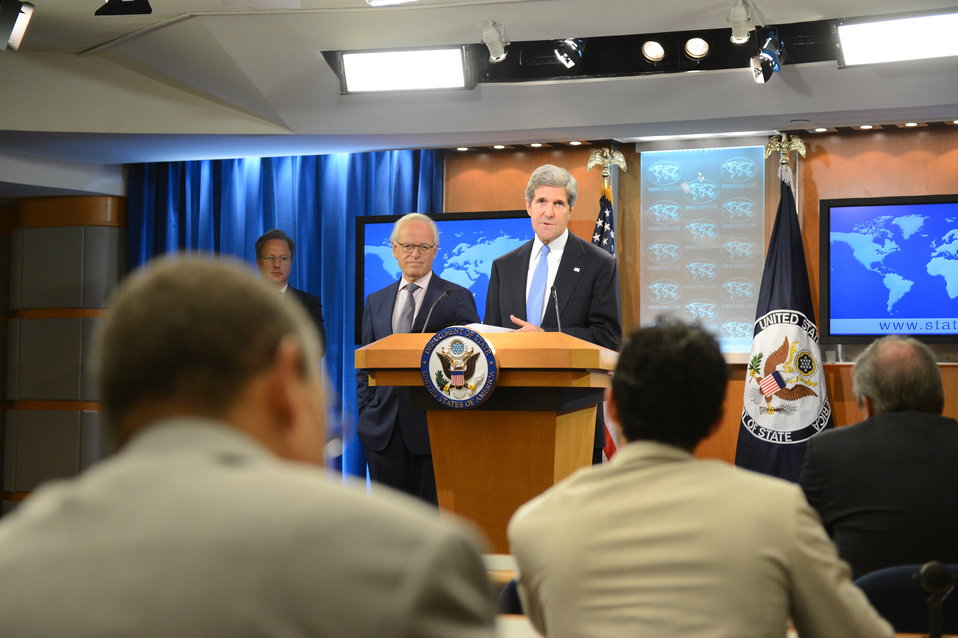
Secretary Kerry Names Ambassador Indyk as Special Envoy for Israeli-Palestinian Negotiations

U.S. Secretary of State John Kerry announces that Ambassador Martin Indyk will serve as the U.S. Special Envoy for Israeli-Palestinian Negotiations at the U.S. Department of State in Washington, D.C., on July 29, 2013.